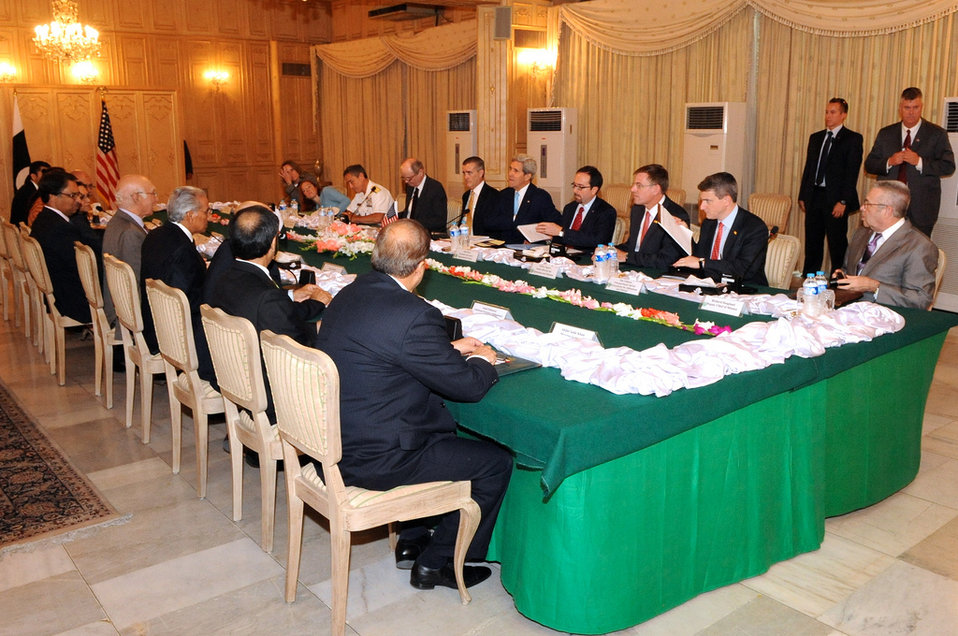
Secretary Kerry Meets With Pakistani Advisor Aziz

U.S. Secretary of State John Kerry leads a delegation meeting with Pakistani Foreign Affairs Advisor Sartaj Aziz in Islamabad, Pakistan, on August 1, 2013.